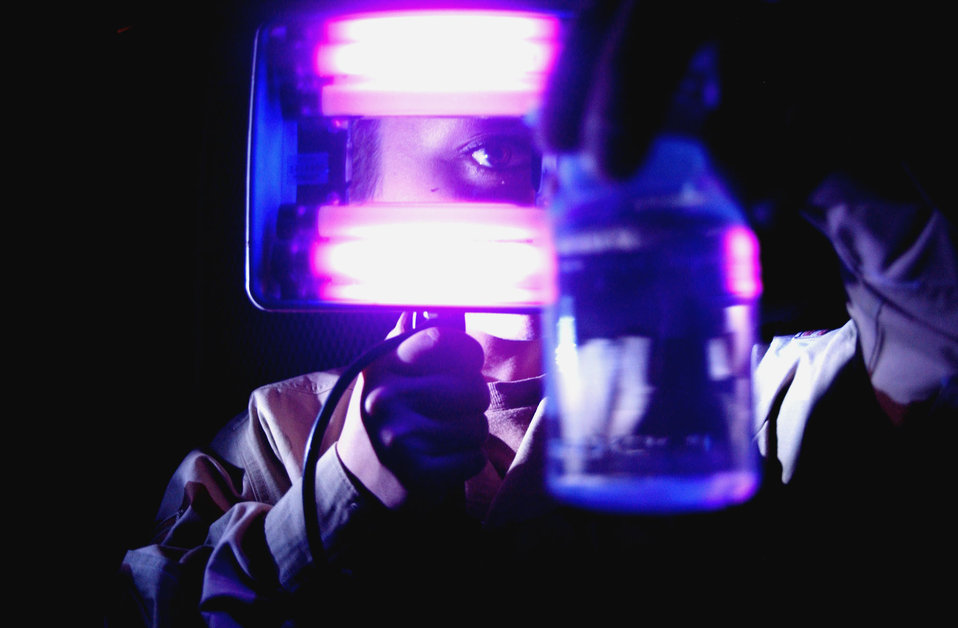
Bio shop provides peace of mind

BALAD AIR BASE, Iraq -- Senior Airman Aubrey Pabon checks a water sample for contamination using a blacklight. She is a bioenvironmental engineering technician with the 332nd Aerospace Medical Squadron.